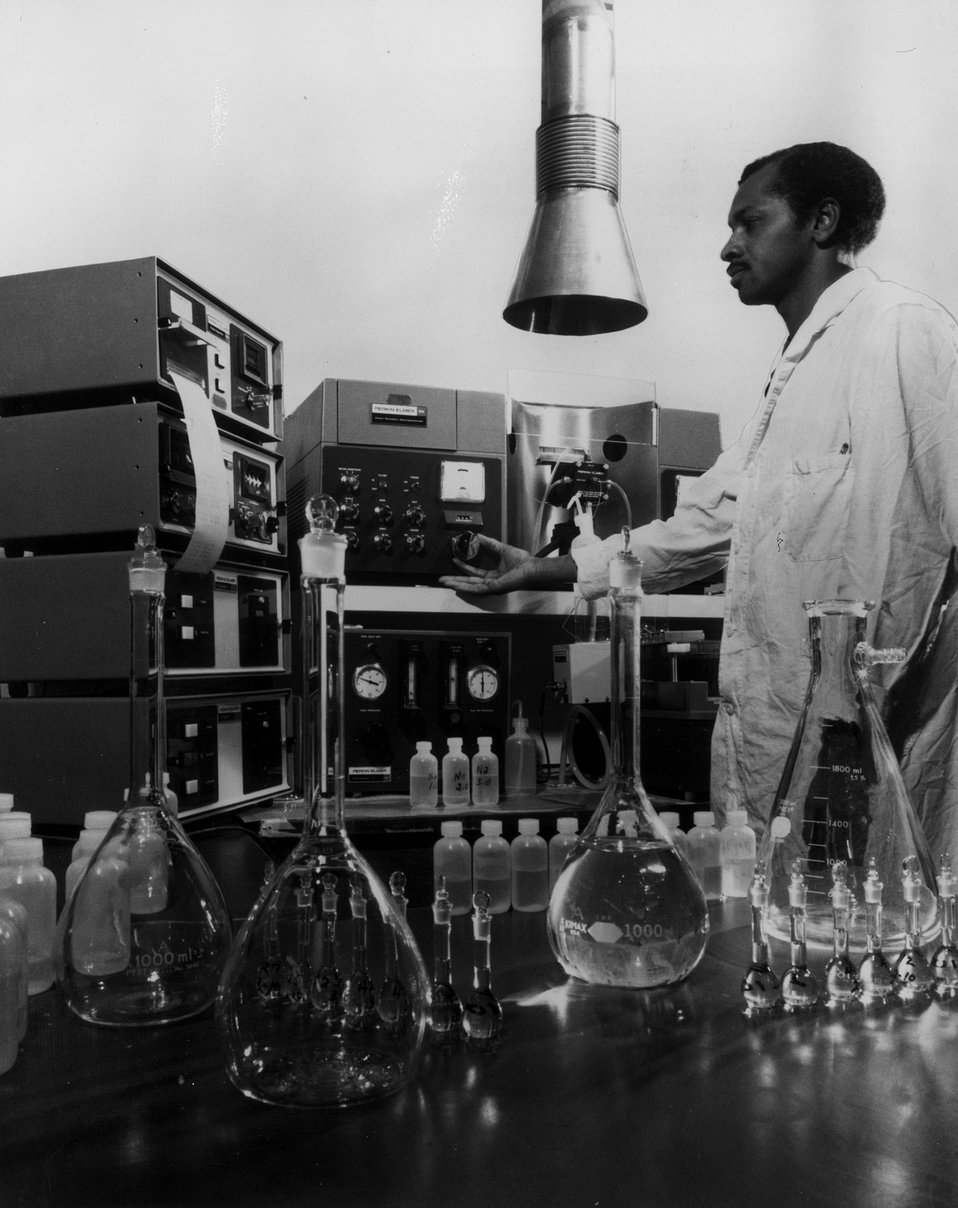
A researcher at the U.S. Atomic Energy Commission's Oak Ridge National Laboratory, Tennessee, is determining the concentration of stable elements in environmental samples such as plants and fish. c. 1972